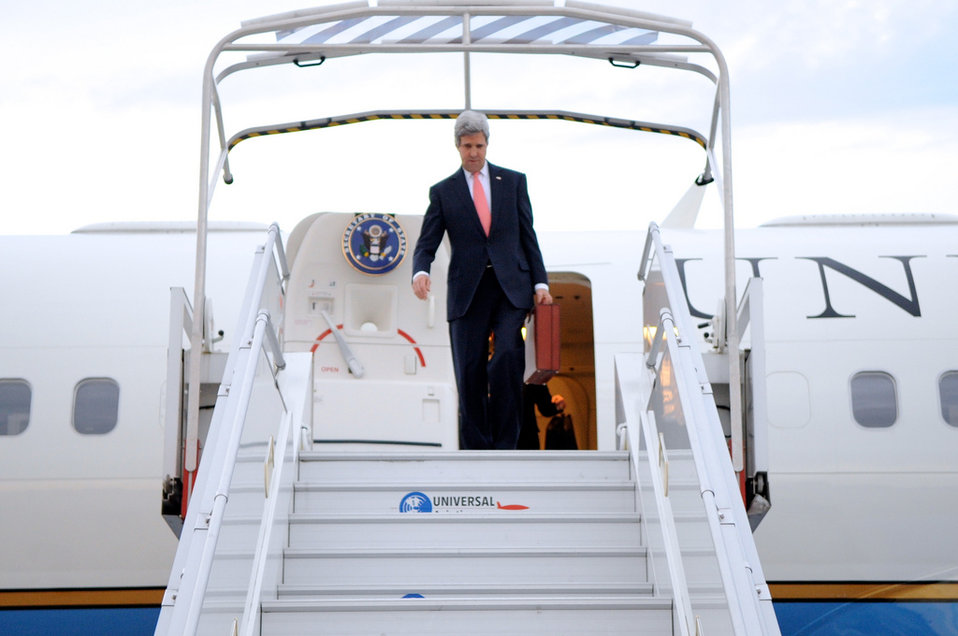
Secretary Kerry Arrives in Paris For Meeting With Russian Foreign Minister Lavrov

U.S. Secretary of State John Kerry steps off his plane at Le Bourget Airport in Paris on March 29, 2014, after breaking off his return to the United States from Saudi Arabia to meet with Russian Foreign Minister Sergey Lavrov in France to discuss Ukraine.